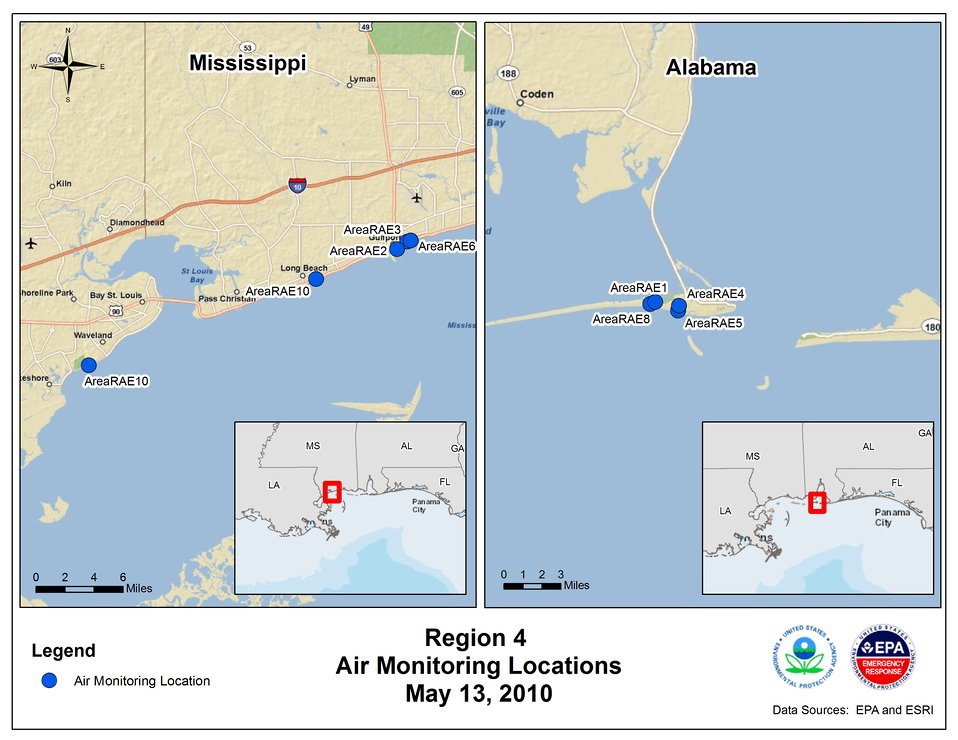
EPA Air Monitoring Locations May 13, 2010